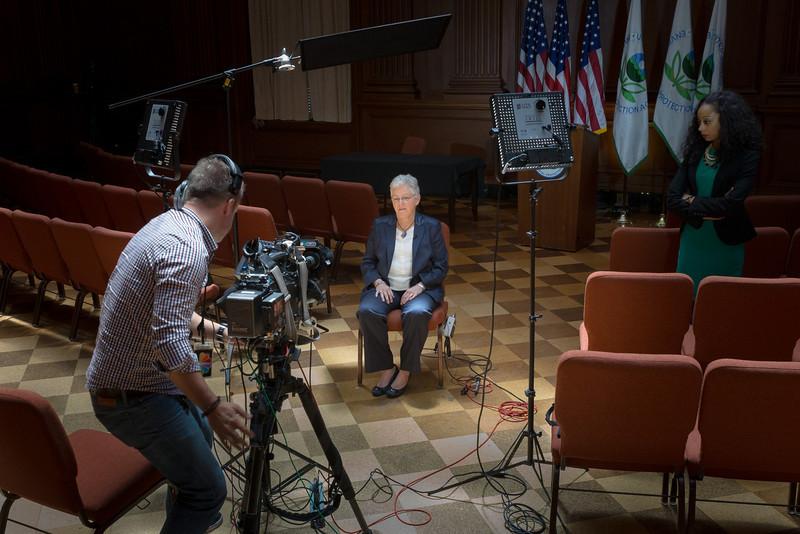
Day in the Life - June 2, 2014

12:11 pm - Another interview. Here McCarthy prepares to speak with MSNBC’s Andrea Mitchell. (11/15)